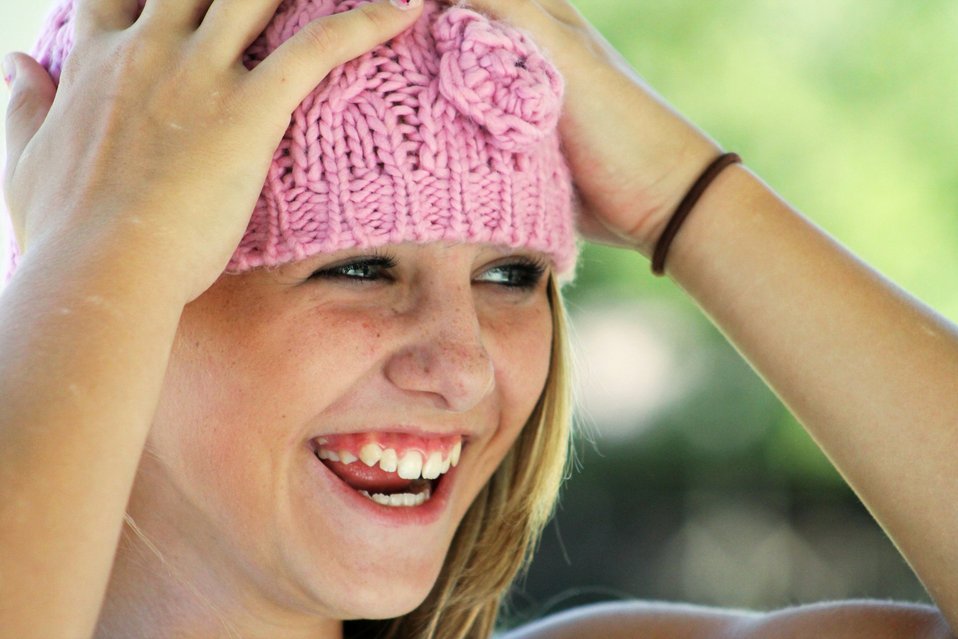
Cora

Happy girl smiling.